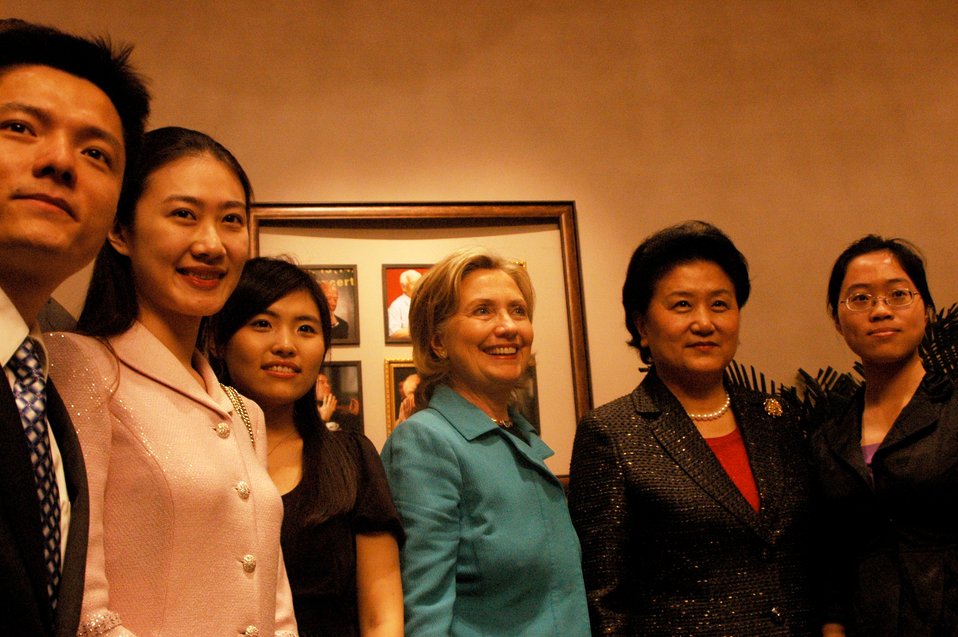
Secretary Clinton and Chiense State Councilor Liu Yandong Meet With Chinese Women Civil Society Leaders

U.S. Secretary of State Hillary Rodham Clinton and Chinese State Councilor Liu Yandong meet with Chinese Women Civil Society Leaders in Beijing, China, May 26, 2010.